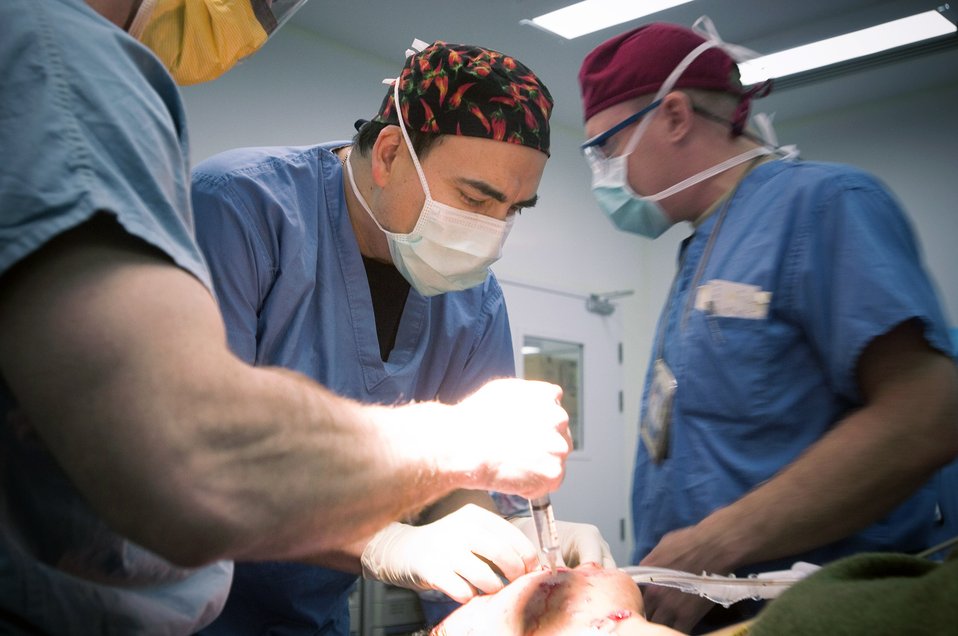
Combat Nurses: The OR --PART 2

Capt. George Moctezuma, an operating room nurse, looks over the face of a wounded Iraqi security forces member at the Air Force Theater Hospital here. The patient's face was peppered with stone pebbles from a blast. According to Captain Moctezuma, the human face is more disease resistant than most bodily tissue. The captain is deployed from Wilford Hall Medical Center, San Antonio, Texas.